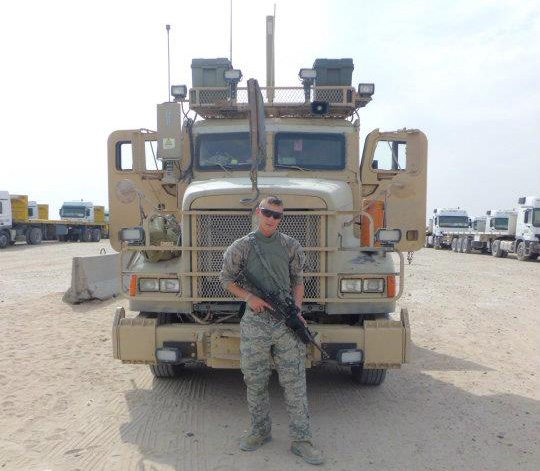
Through Airmen's Eyes: Senior Airman William Peters

Senior Airman William Peters prepares for a convoy during his deployment to Camp Arifjan, Kuwait. Peters was deployed July 2011 through February 2012, during which he was a part of convoys that went into Iraq to bring equipment in and out of the country. Peters is with the 509th Logistics Readiness Squadron vehicle operations at Whiteman Air Force Base, Mo.